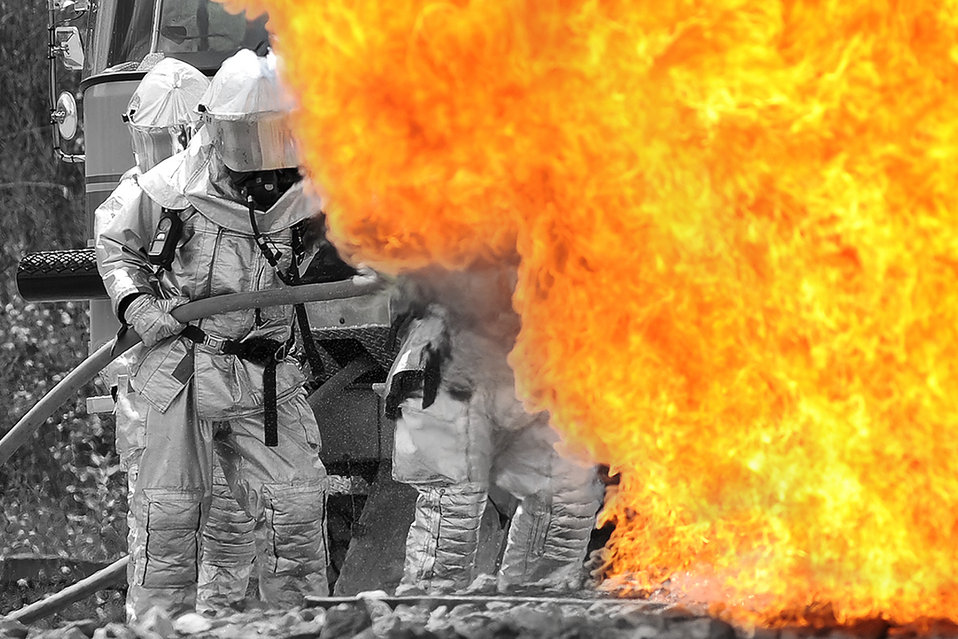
Guard firefighters train for emergencies

Firefighters battle a roaring fire while participating in a aircraft 'crash' during a live fire response exercise held at the Combat Readiness Training Center at Alpena, Mich., July 21, 2010. The firefighters are with the Michigan Air National Guard's 127th Wing at Selfridge Air National Base.